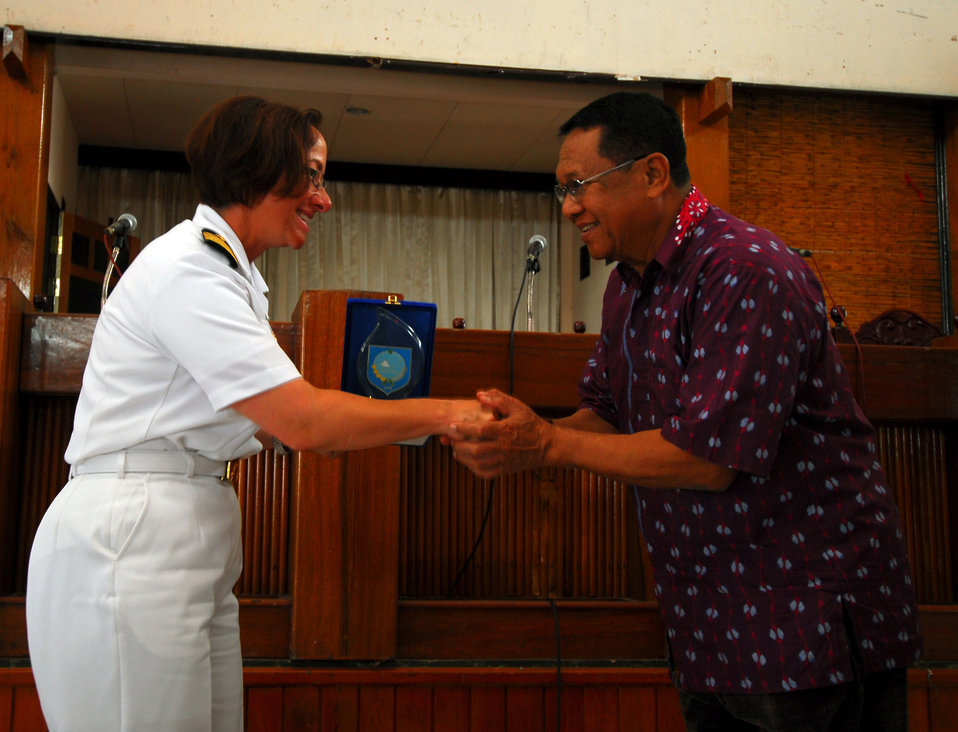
PP 2010 Commander Capt. Franchetti Receives a Gift From a Local Government Official of Ternate, Indonesia

Pacific Partnership 2010 Commander Capt. Lisa M. Franchetti receives a gift from a local government official of Ternate, Indonesia, on July 24, 2010. The Military Sealift Command hospital ship USNS Mercy (T-AH 19) is in the North Maluku Islands conducting Pacific Partnership 2010, the fifth in a series of annual U.S. Pacific Fleet endeavors conducted in Indonesia as a disaster relief exercise aimed at strengthening regional partnerships.